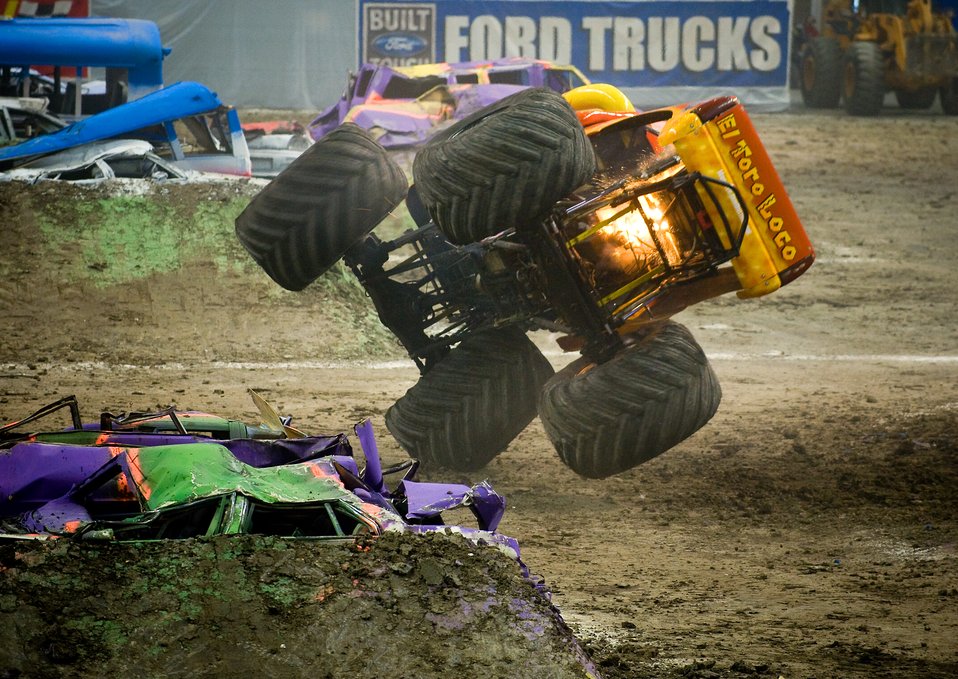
AF flies high at Monster Jam

Lupe Soza, driving El Toro Loco, gave the best freestyle performance with a perfect score to win the event at the 2009 Monster Jam at the Alamodome in San Antonio on Jan 11. Mr. Soza drove his truck to the limit with multiple two-wheeled saves as he jumped off, bounced on and drove over the obstacles made of dirt mounds, busses and crushed cars. Approximately 45,000 people attend the event. These monster trucks have big block supercharged racing V-8 engines that churn out more than 1,400 horsepower. They weigh approximately 10,000 lbs and are equipped with four-wheel steering. The wheels and tires are 66